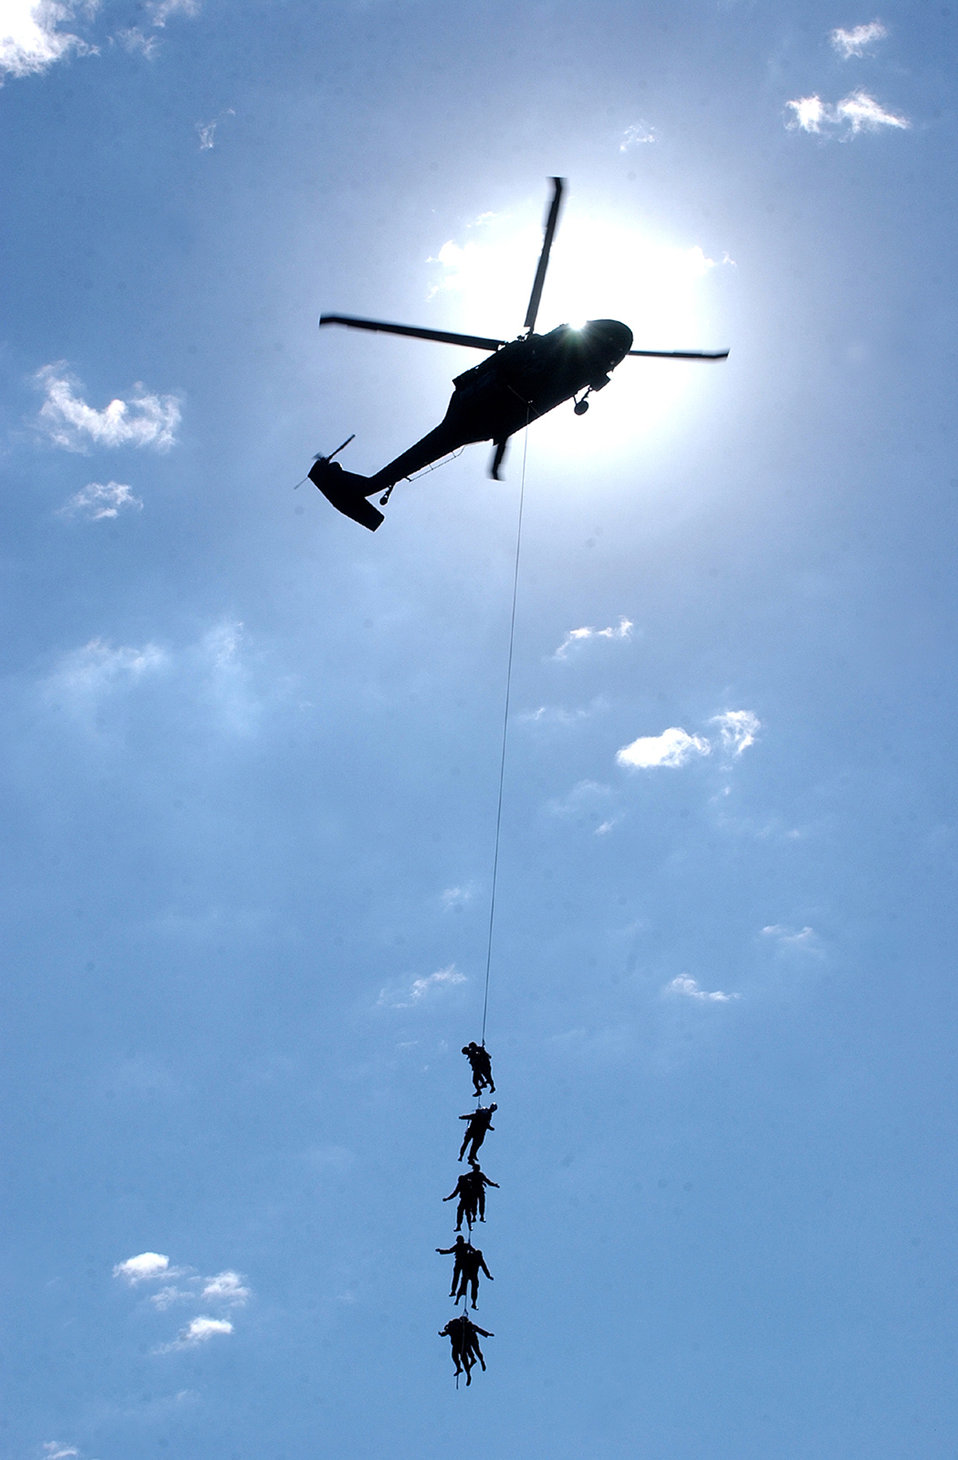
Hang on

SOTO CANO AIR BASE, Honduras - Soldiers and Airmen hang 100 feet above the ground from a UH-60 Blackhawk here recently. Search and Rescue team members trained in a Special Patrol Infiltration and Exfilration System exercise with aircrews from the 1st Battalion, 228th Aviation Regiment. In turn, the SAR team members serve as a training aids for aircrews to conduct tactical operations on counter-narcoterrorism missions.